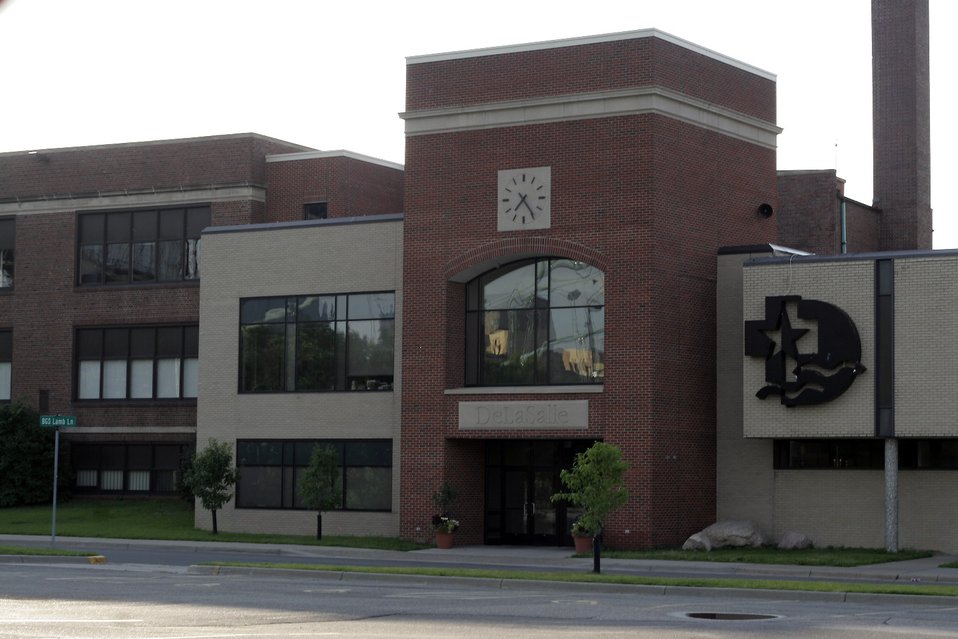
DeLaSalle High School, Minneapolis, in July 2006